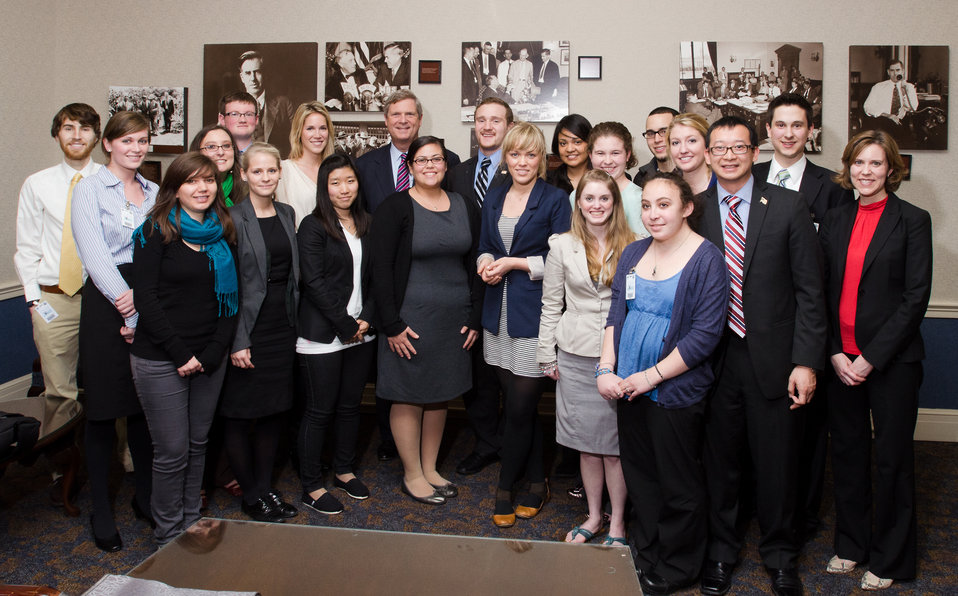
Group photo of U.S. Department of Agriculture (USDA) Secretary Tom Vilsack (left of center, back row) and American University students, who visited the USDA in Washington, DC, on Wednesday March 23, 2011, to learn about the Foreign Agriculture Service and the international role of the USDA. Supporting their visit was Deputy Under Secretary Farm and Foreign Agricultural Services Darci Vetter (right).